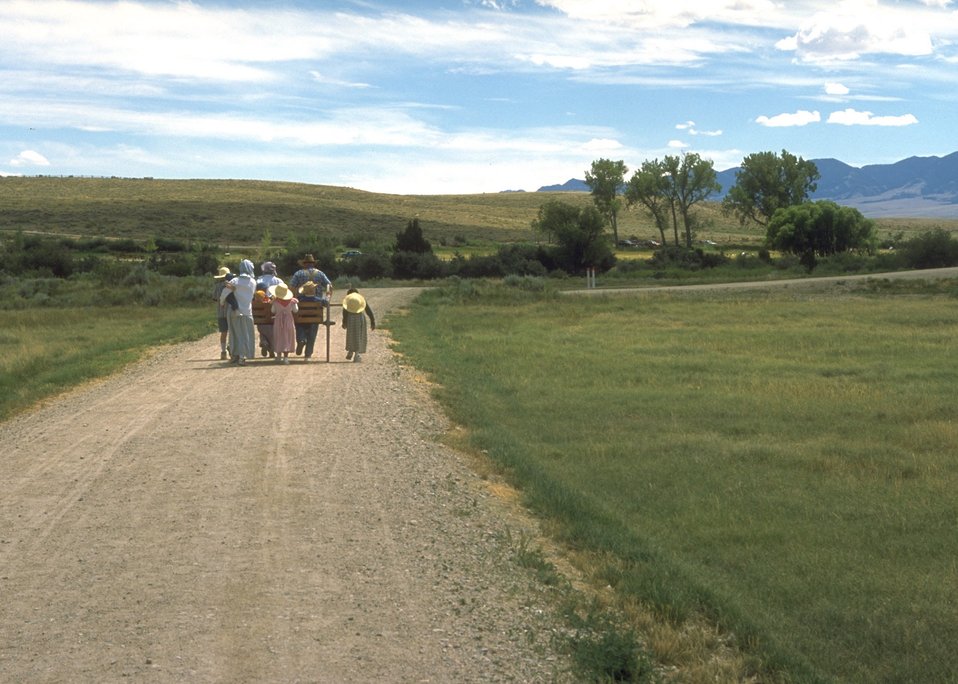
Handcart re-enactment on the Mormon Trail between Devil's Gate and Martin's Cove, Rawlins Field Office.